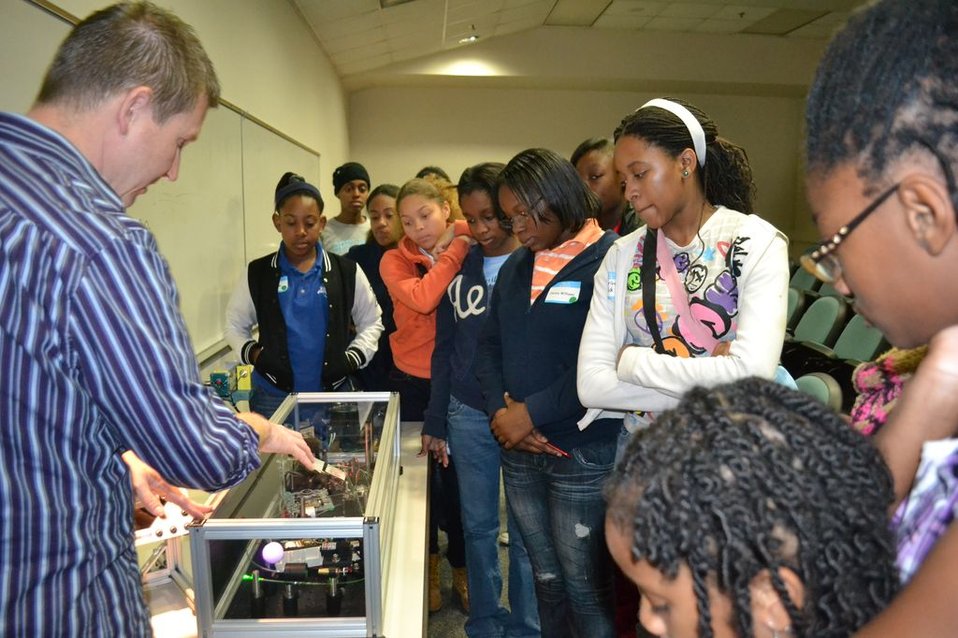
Spelman Girls Institute Nov 2012

Throughout the day, girls participated in hands-on workshops led by Spelman University staff.